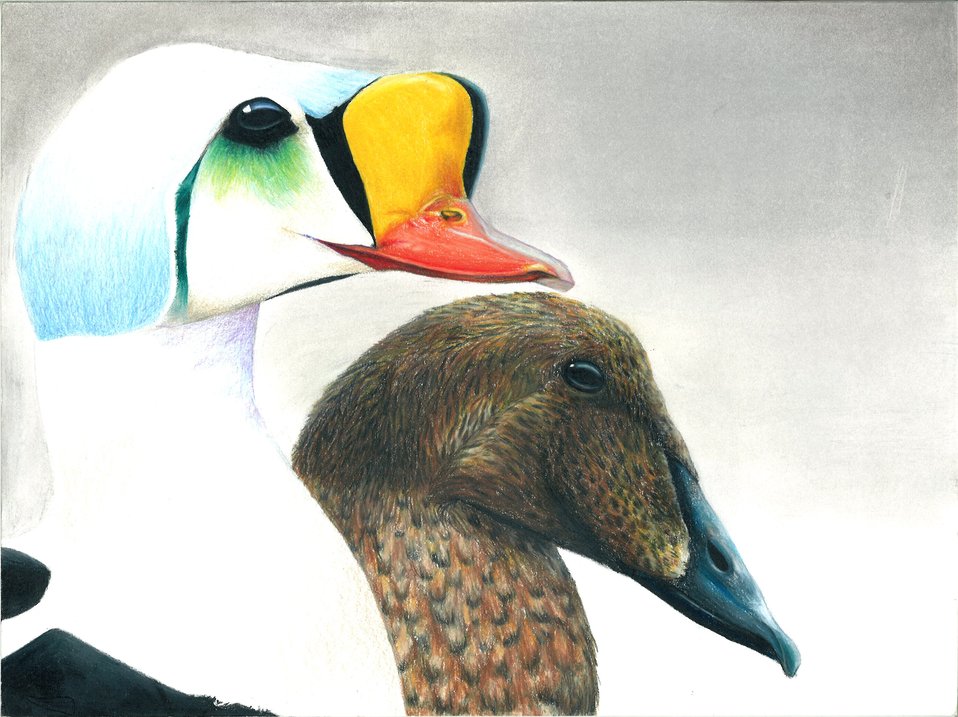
Tennessee

2012 Jr Duck Stamp Program
State Best of Show
Tennessee